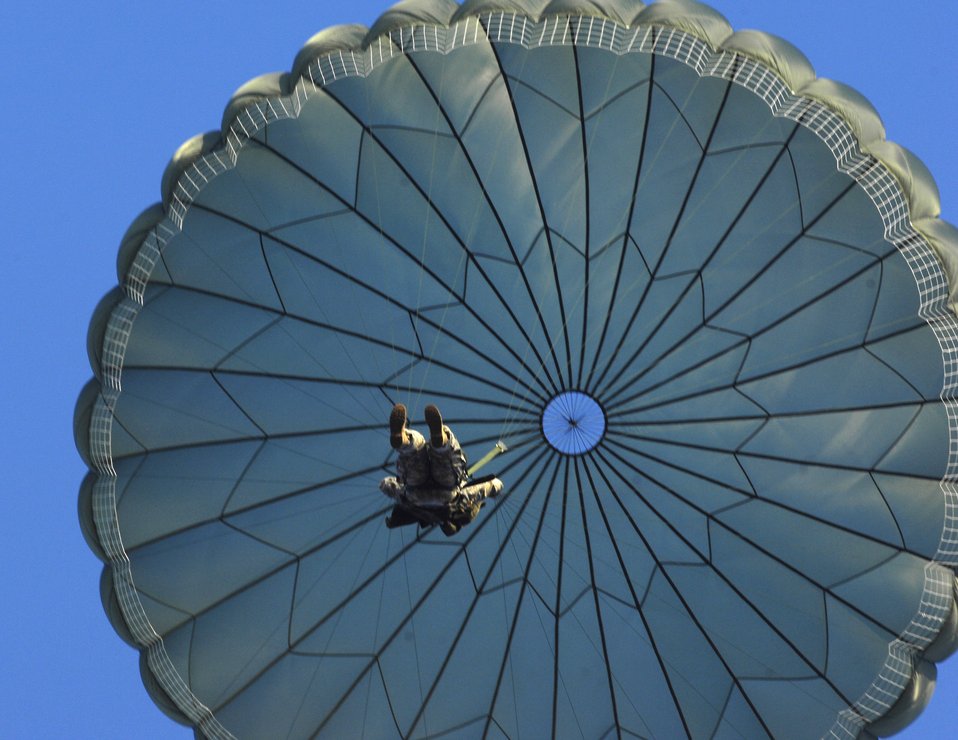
It's so quiet up here

A U.S. Army paratrooper from Fort Bragg, N.C., makes a slow descent during Operation Toy Drop. Paratroopers participate in the annual operation by donating a toy in exchange for a chance to make a non-tactical parachute jump from a 43rd Airlift Wing C-130 from Pope Air Force Base, N.C.